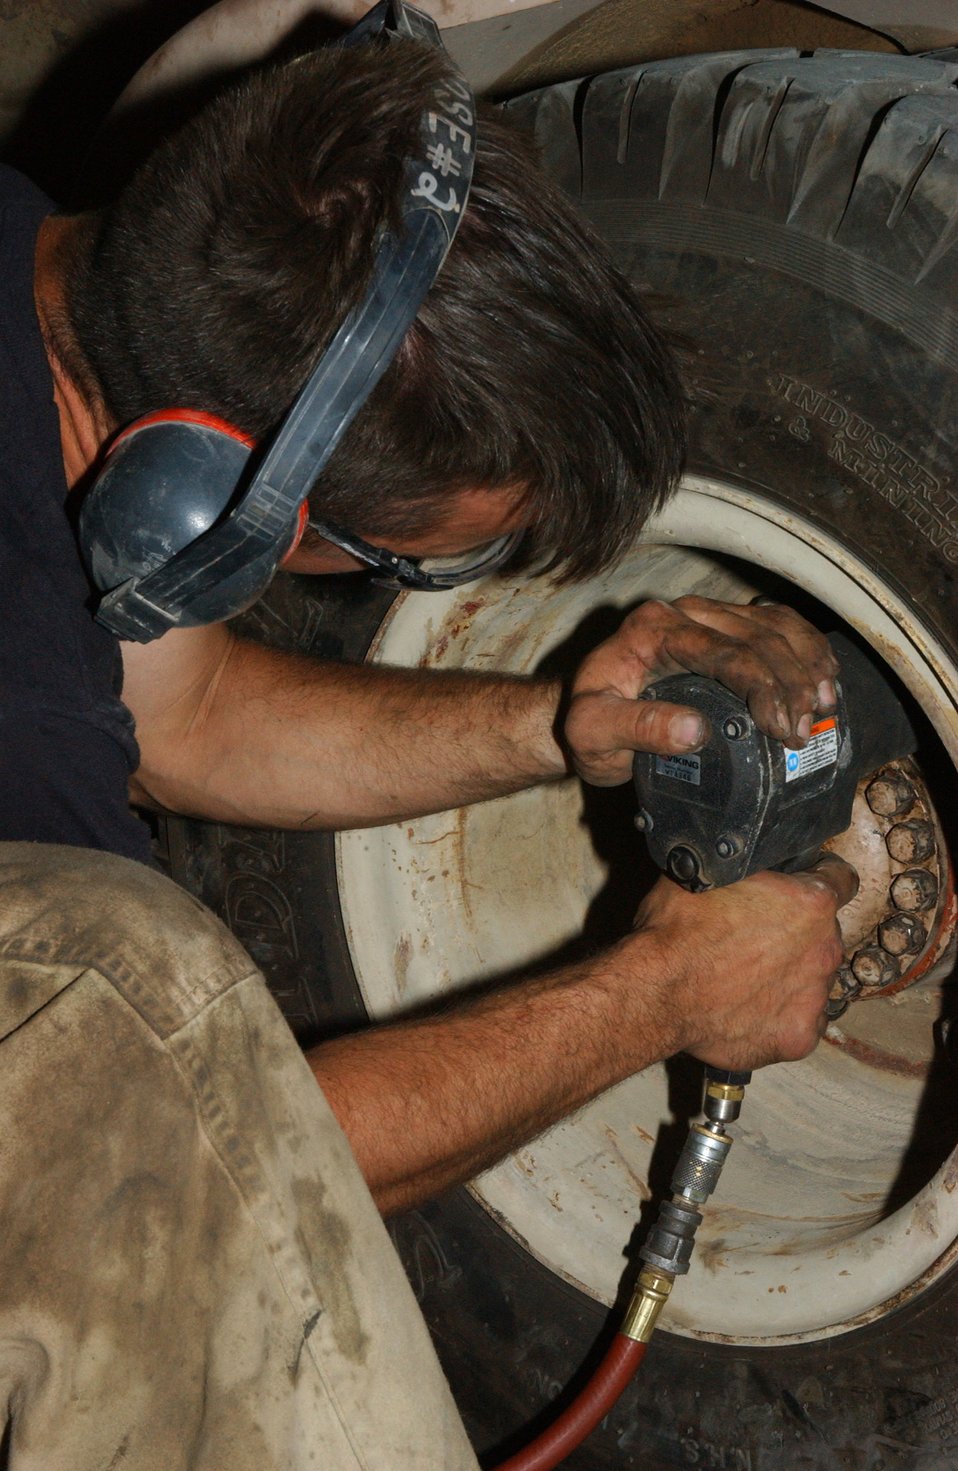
Rough conditions take toll on vehicles

Staff Sgt. Shawn Reed finishes putting on a wheel after replacing the brakes on a forklift at Ali Base, Iraq. Sergeant Reed is assigned to the 407th Expeditionary Logistics Readiness Squadron vehicle maintenance flight and is deployed from Kadena Air Base, Japan.